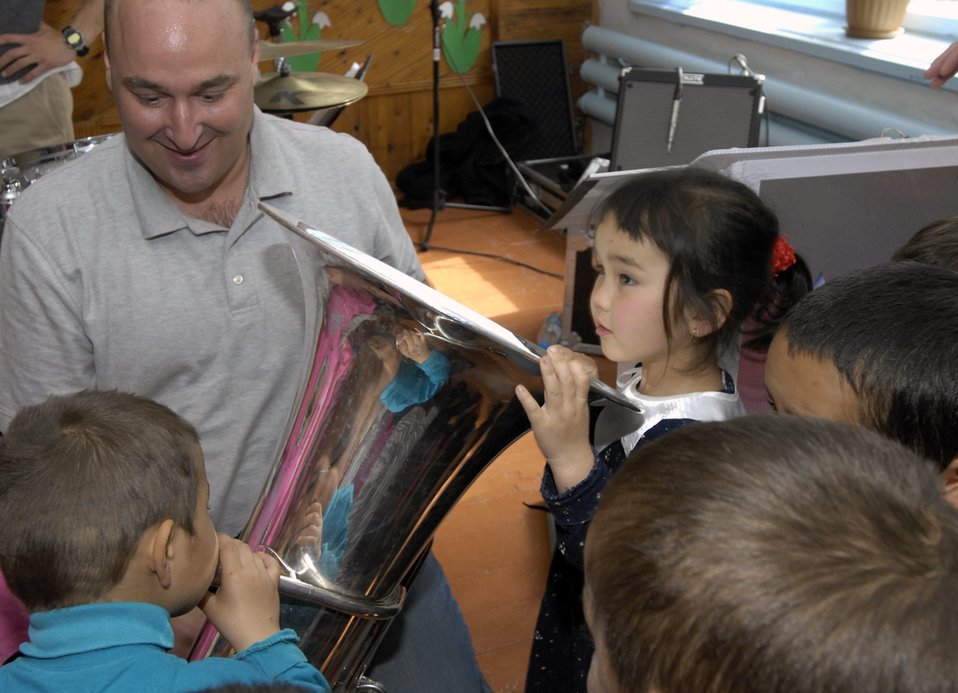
Band members connect with Kyrgyzstan music students

Staff Sgt. Matt Kuebler shows children his tuba during a March 26 visit to their school in Vasilievka, Kyrgyzstan. Sergeant Kuebler is a tuba player with the U.S. Air Forces Central Band Hot Brass. Each band member took the time to introduce the students to each instrument before putting them together in harmony to make music. Hot Brass performed for Manas Air Base Airmen and at numerous off-base locations during their six-day trip to Kyrgyzstan.